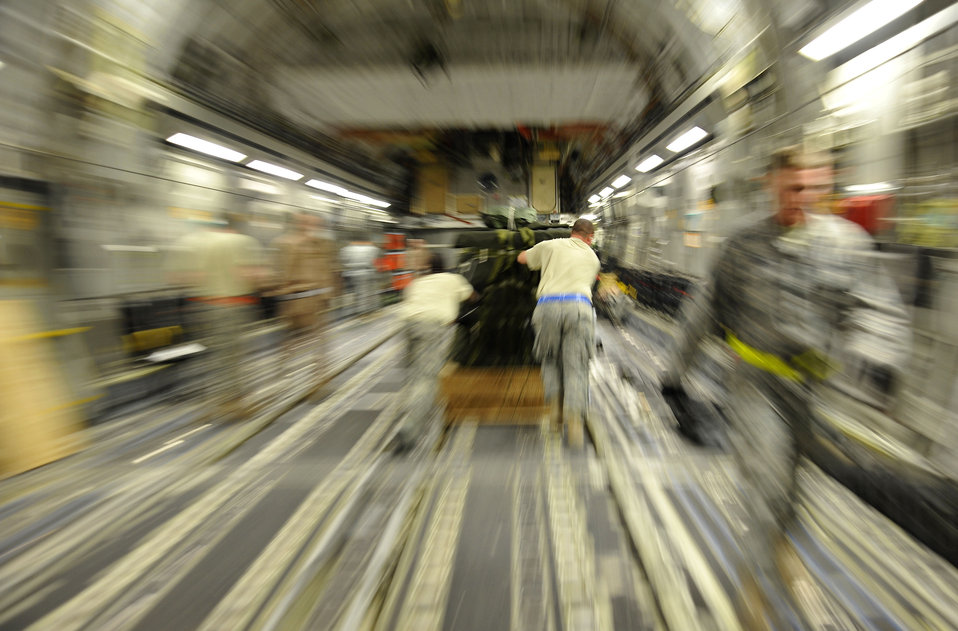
Airmen, Soldiers airdrop supplies to Afghanistan

Airmen from the 8th Expeditionary Aircraft Maintenance Squadron load a C-17 Globemaster III with container delivery system, or CDS, bundles at an air base in Southwest Asia Jan. 9, 2010. The CDS bundles will be dropped to U.S. forces in Afghanistan.